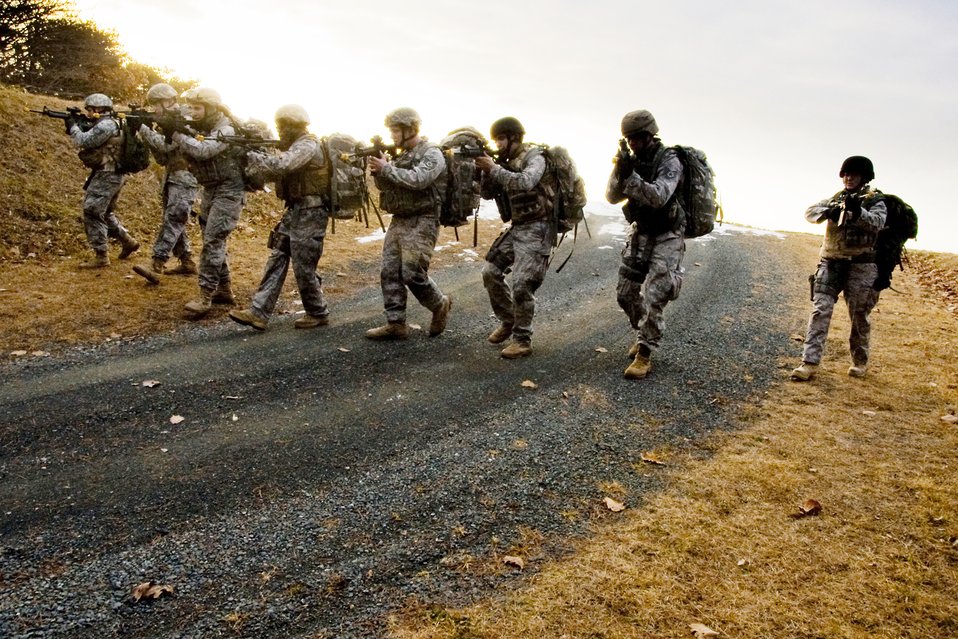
Misawa EOD unit keeps physically fit

Airmen of the 35th Civil Engineer Squadron Explosive Ordnance Disposal flight perform a transition drill during a ruck march Jan. 8, 2010, at Misawa Air Base, Japan. The drill trained members on the proper way to transition from a primary to a secondary weapon formation.